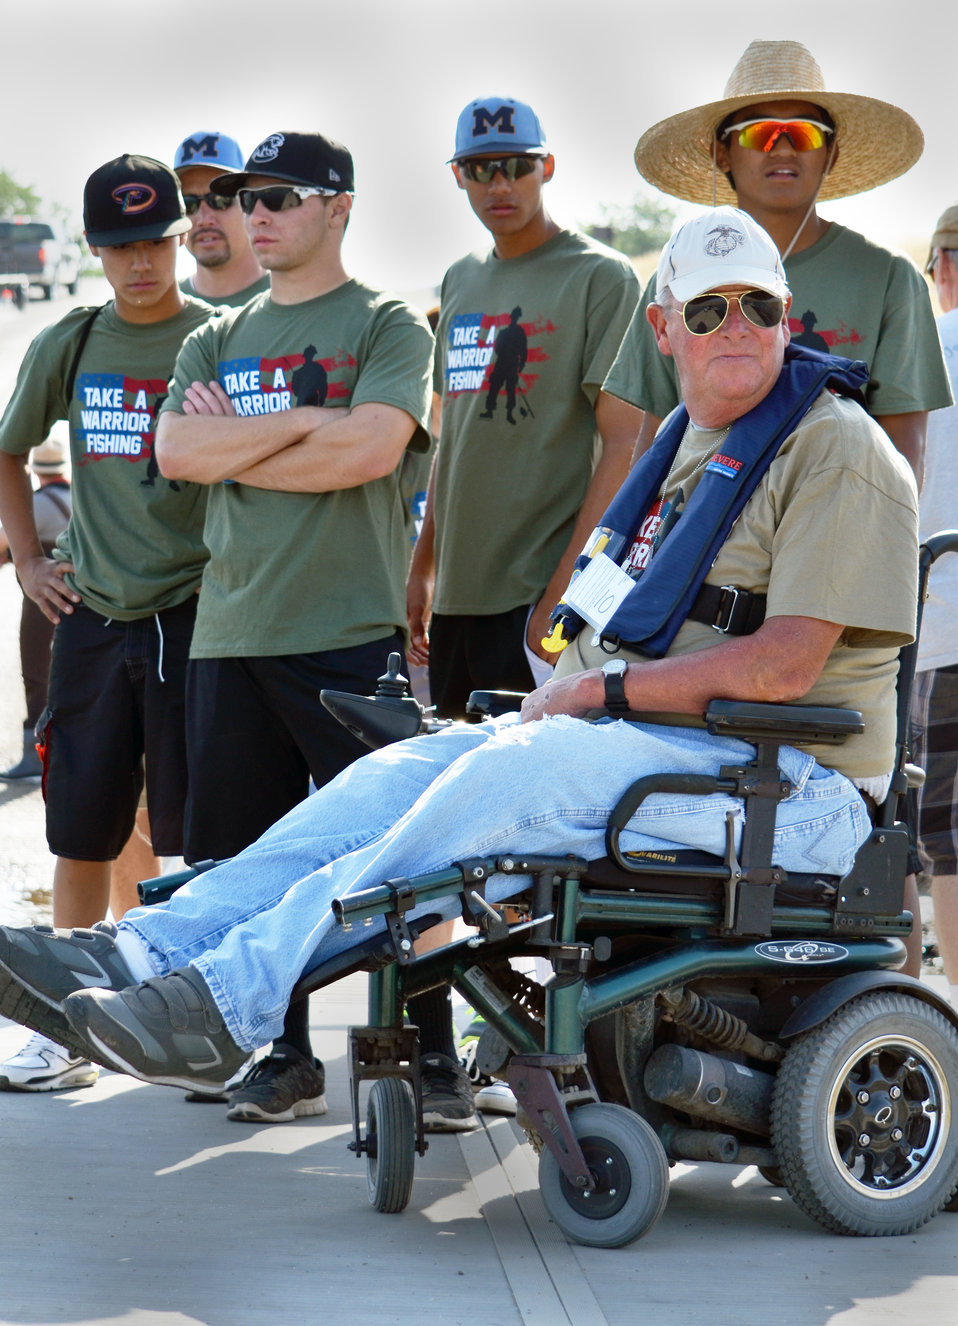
Baseball buddies (“Take a Warrior Fishing” event at Success Lake)

Members of the Marauders baseball team from Monache High School assisted wounded warriors and their families who were enjoying a day of fishing during the 'Take a Warrior Fishing' event at Success Lake, located near Porterville, Calif., May 4, 2013. This is the second year the U.S. Army Corps of Engineers Sacramento District has hosted the event. Photo cropped for emphasis.